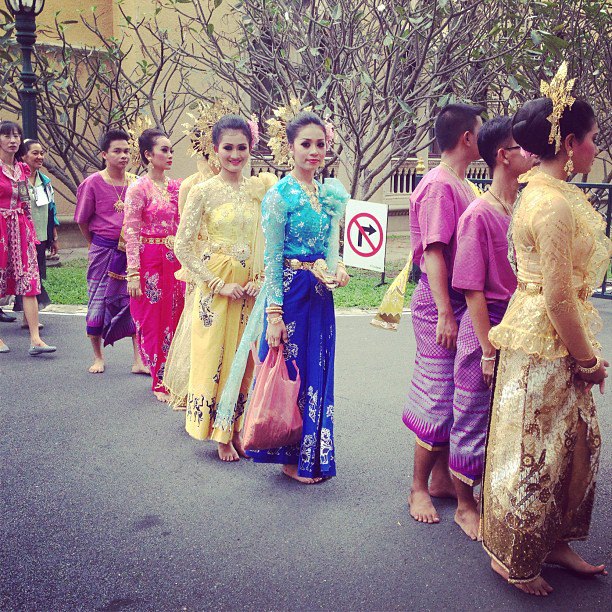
Traditional Thai Dancers Prepare To Perform for President Obama

Traditional Thai dancers prepare to perform for U.S. President Barack Obama at the Government House in Bangkok, Thailand, November 18, 2012.